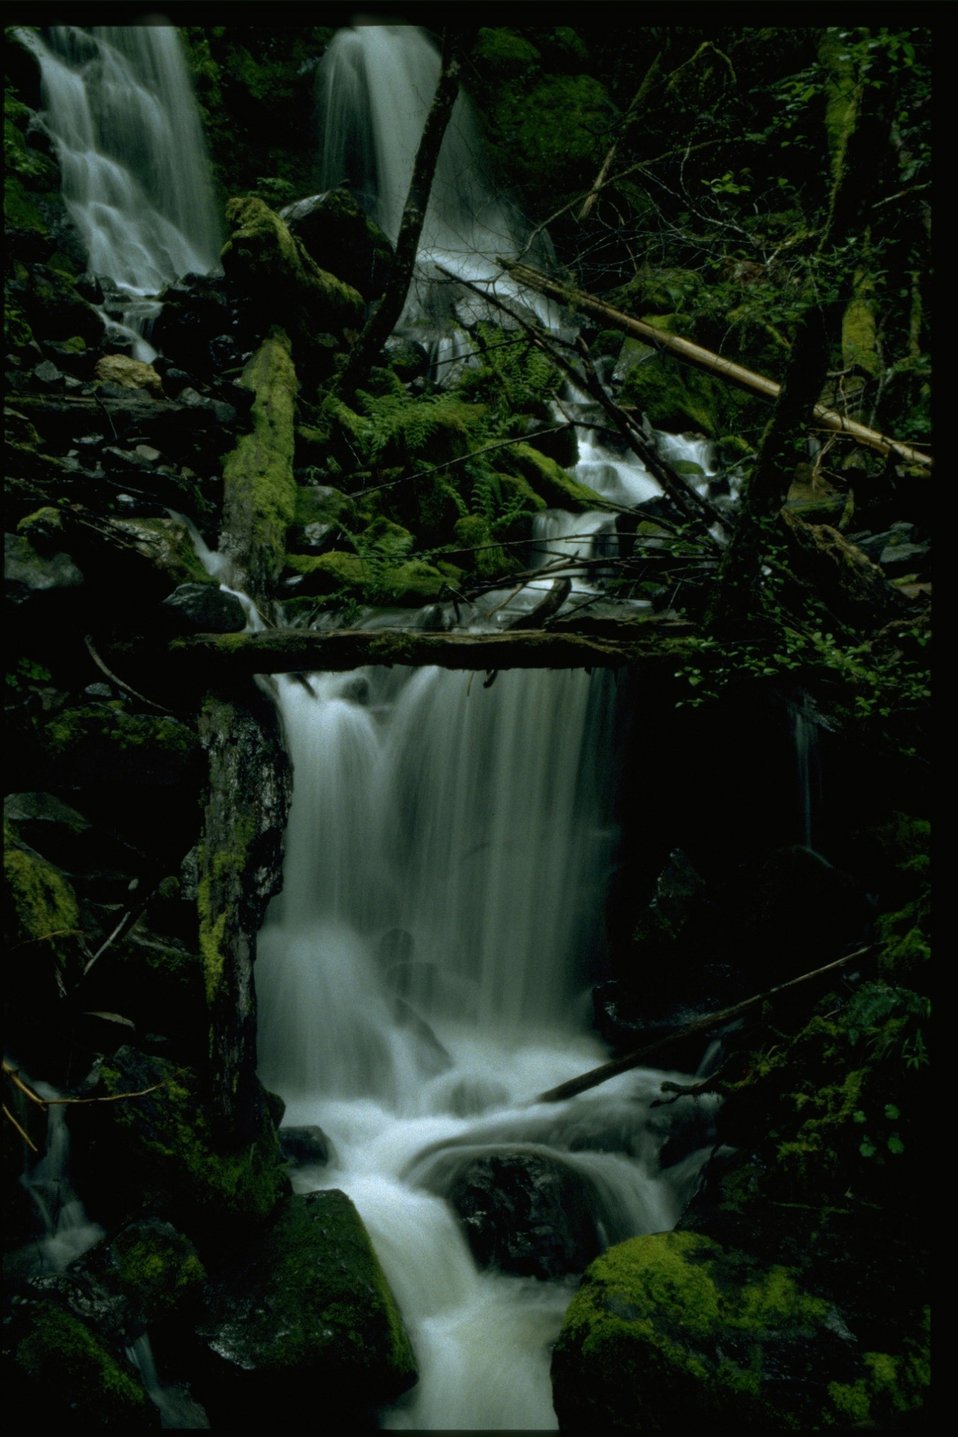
Swiftwater stream.